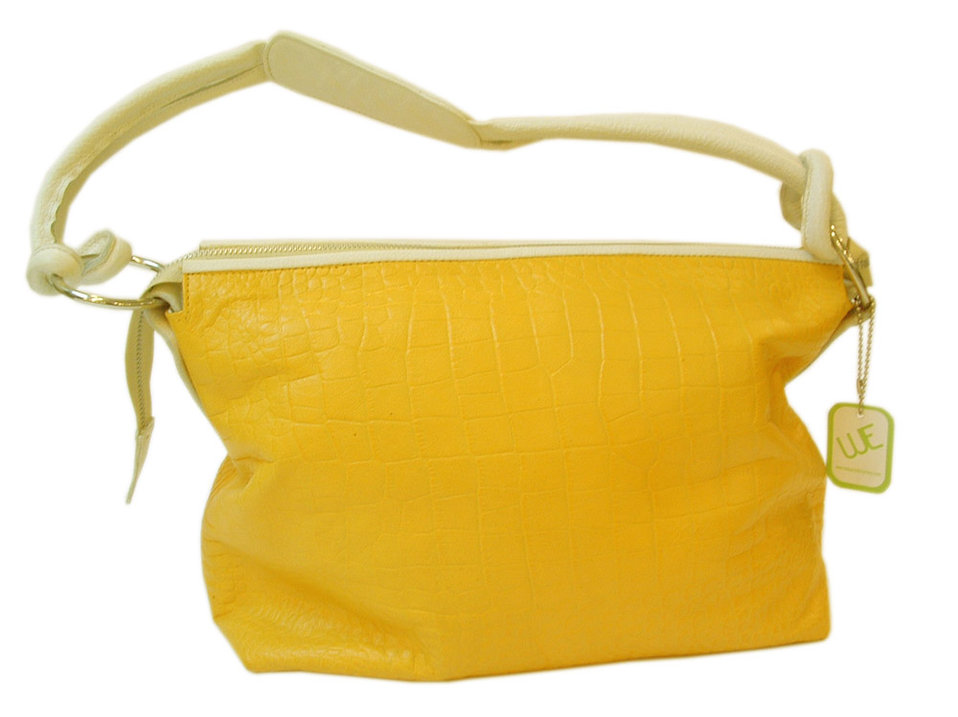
Ladies Leather Handbag